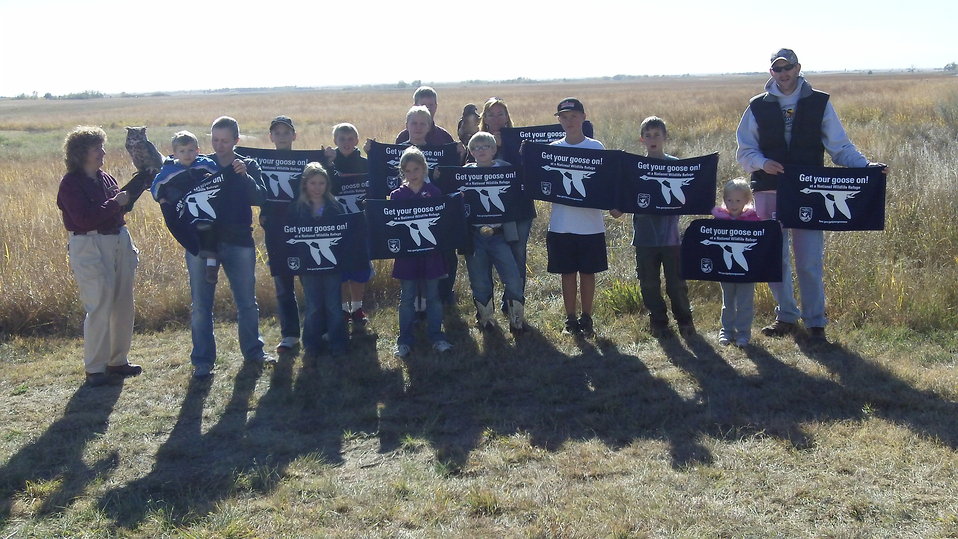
Get Your Goose On! - Raptor Style!

During Huron Wetland Management District's 2012 Prairie Festival, visitors were treated to an up close and personal look at various birds of prey.